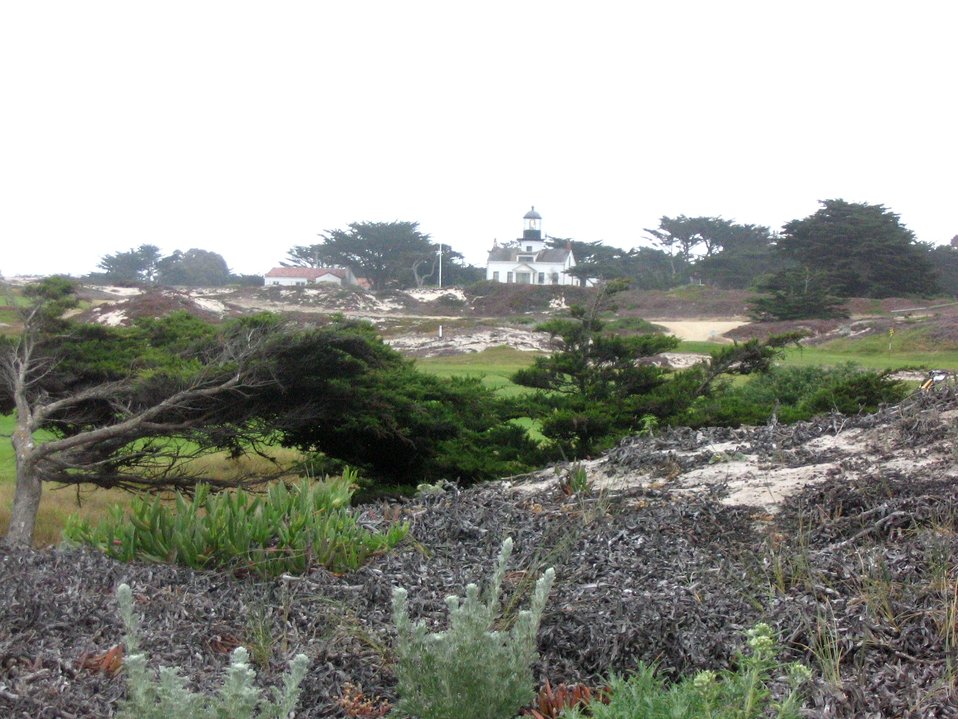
The Point Pinos Lighthouse seen over the Asilomar Dunes.